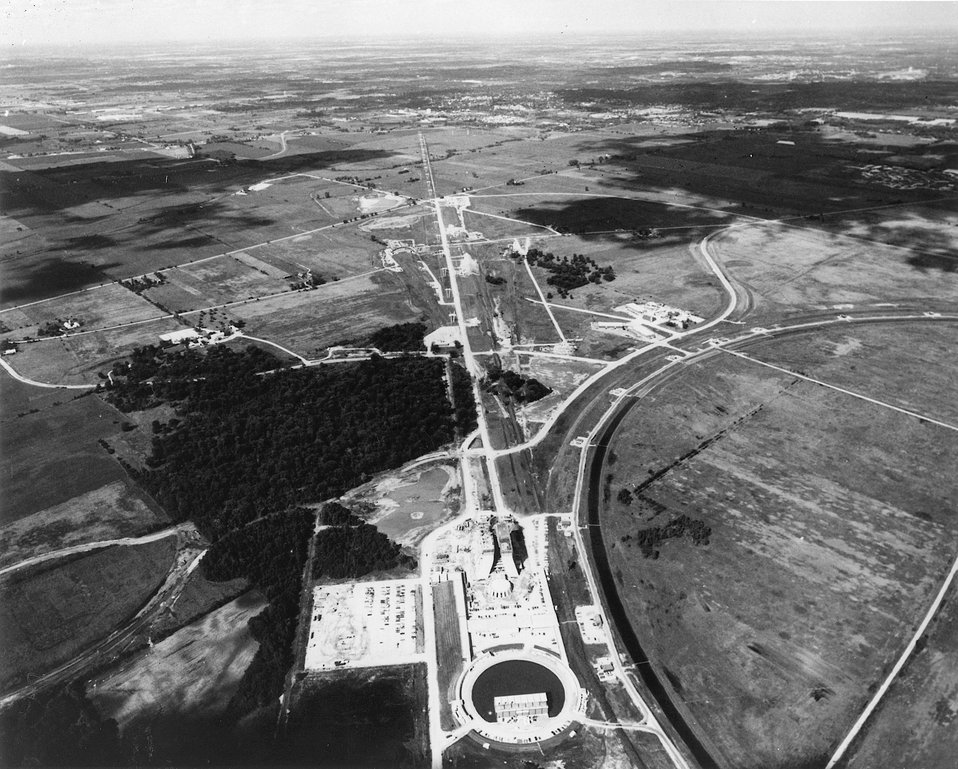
An areal view of laboratories and a section of the main ring at AEC NAL.
c.1972